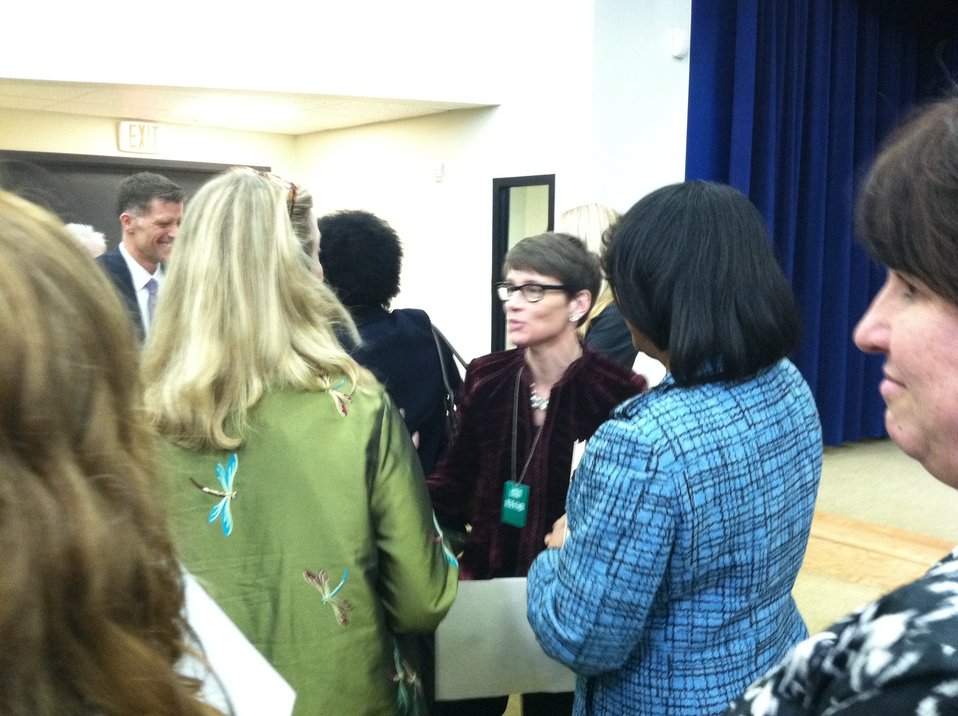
Nancy with Sandy Thurman